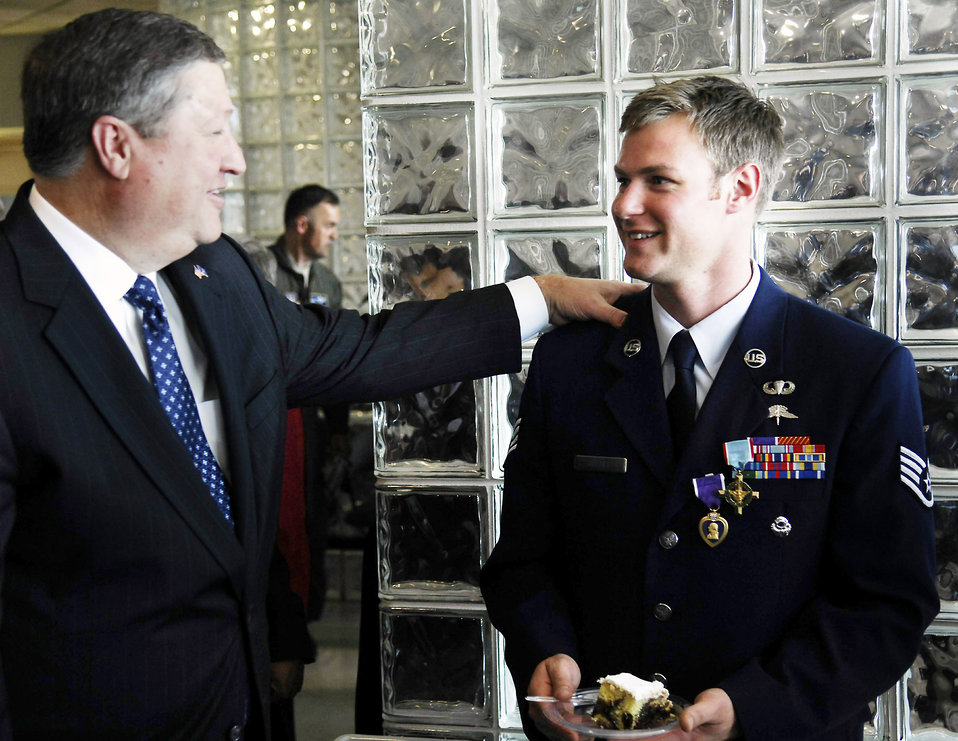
For uncommon valor

Secretary of the Air Force Michael B. Donley talks to Air Force Cross recipient, Staff Sgt. Zachary Rhyner, after the awards ceremony March 10 at Pope Air Force Base, N.C. Sergeant Rhyner received the medal for uncommon valor during an intense battle in Shok Valley, Afghanistan last year.